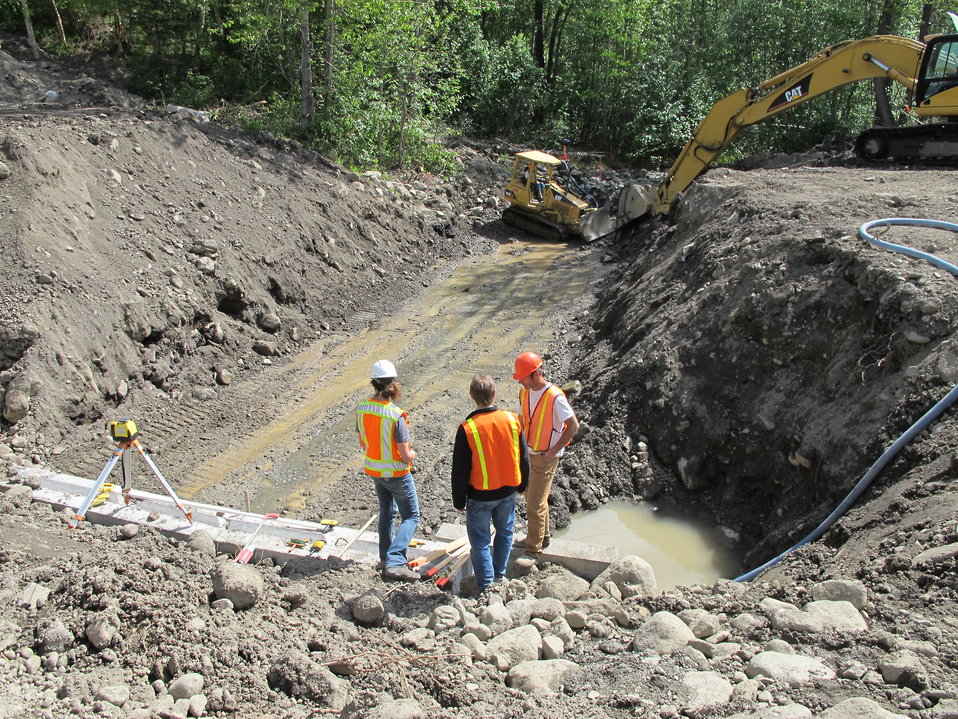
Eska Creek culvert under construction

Project partners from the Service, Alaska Department of Fish and Game, and
Chickaloon Village Traditional Council survey removal of the last barrier on Eska Creek. The project opened up four miles of habitat upstream to coho and chum salmon and Dolly Varden char. USFWS/Katrina Mueller